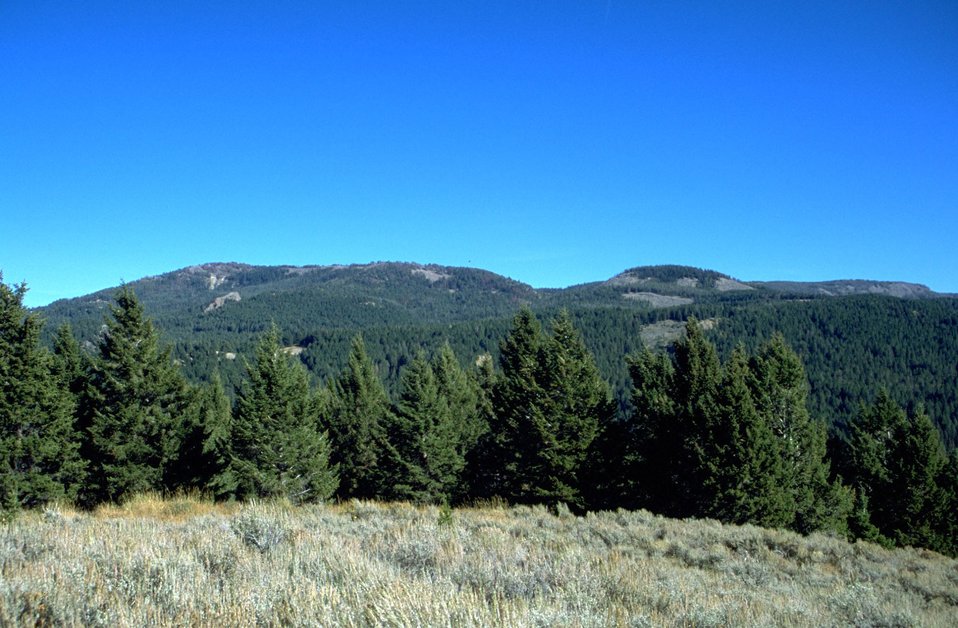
Sage Brush with forest and clear cut in background